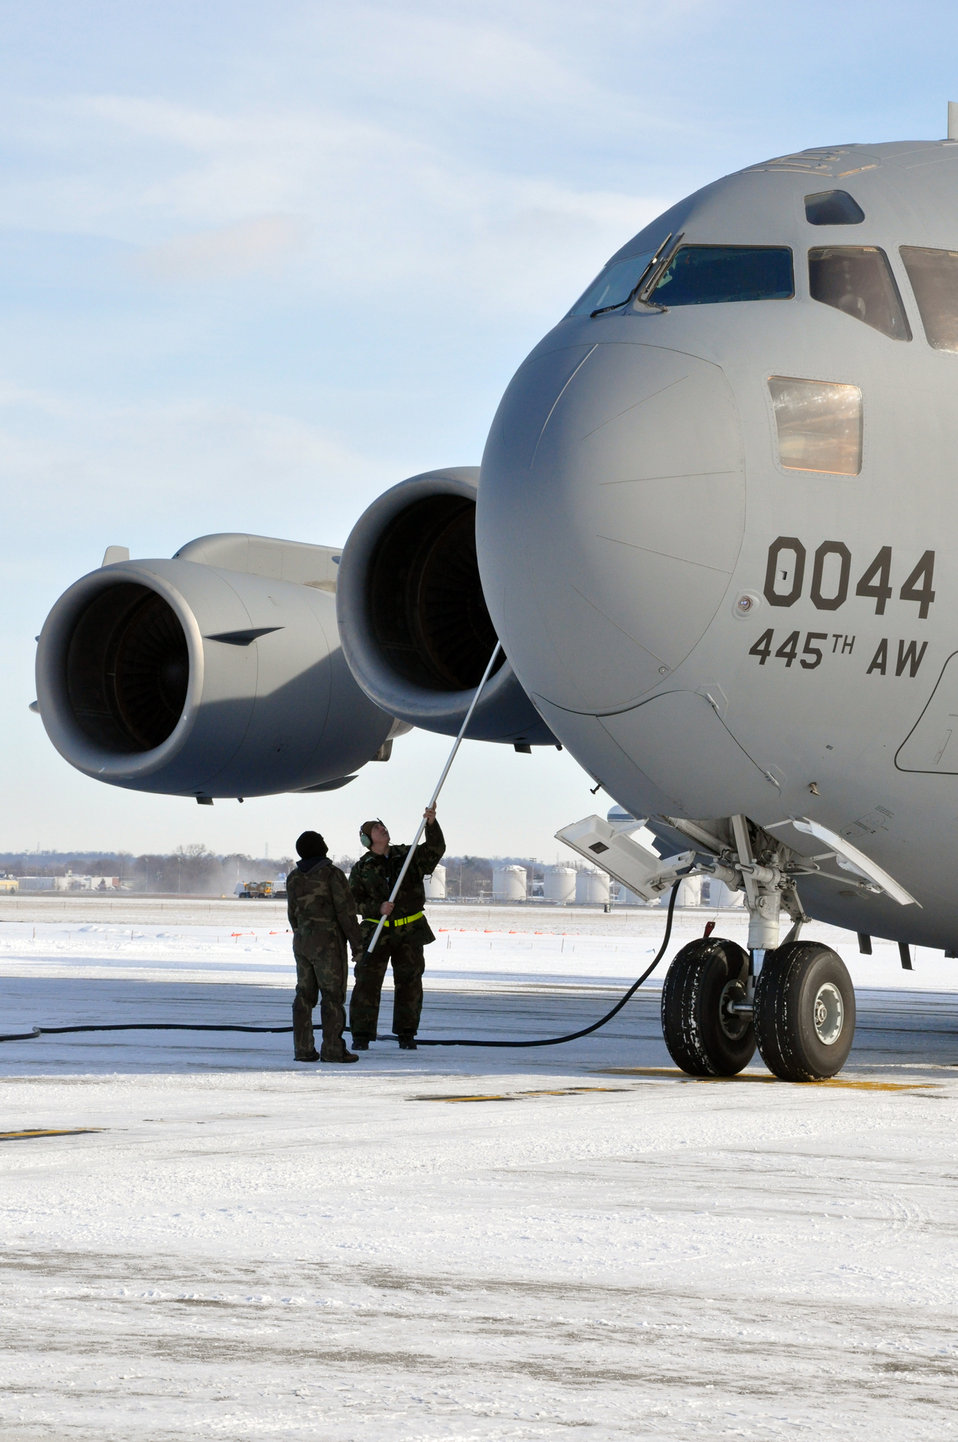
Fit to fly

Two crew members from the Air Force Reserve Command's 445th Airlift Wing work on a C-17 Globemaster III Jan. 21, 2011, at Wright-Patterson Air Force Base, Ohio.